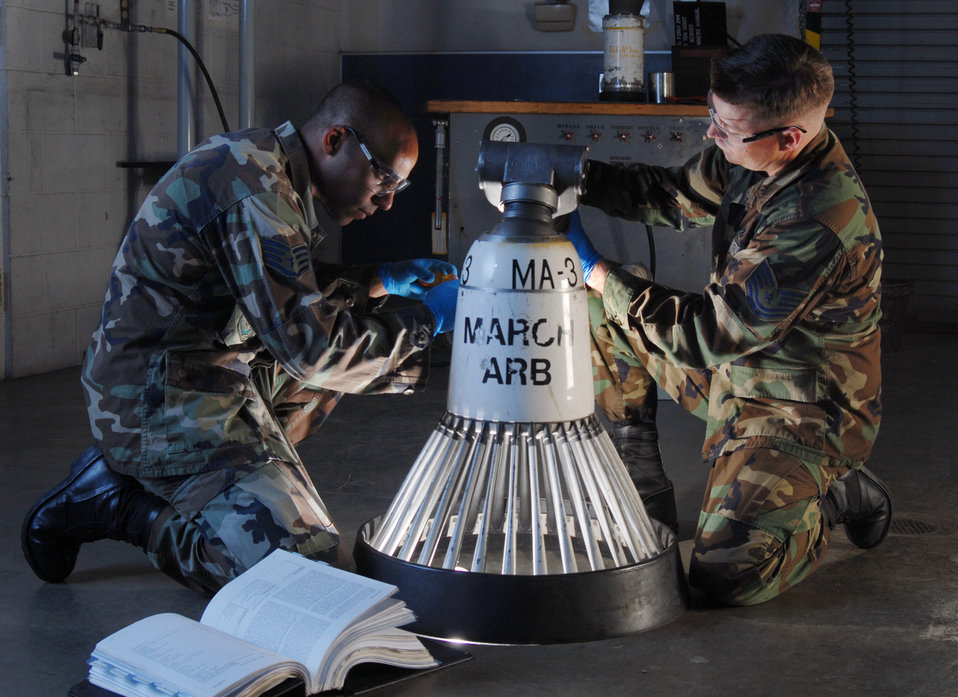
Refueler maintenance

Staff Sgt. Chris Wietecha (left) and Tech. Sgt. Christopher Walls conduct a pressurization test March 25 on a KC-135 Stratotanker aerial refueling drogue. The sergeants are with the 452nd Maintenance Squadron's aircraft pneudraulics systems shop at March Air Reserve Base, Calif. March ARB, located in Southern California, is home to the largest air mobility wing in the Air Force Reserve Command.